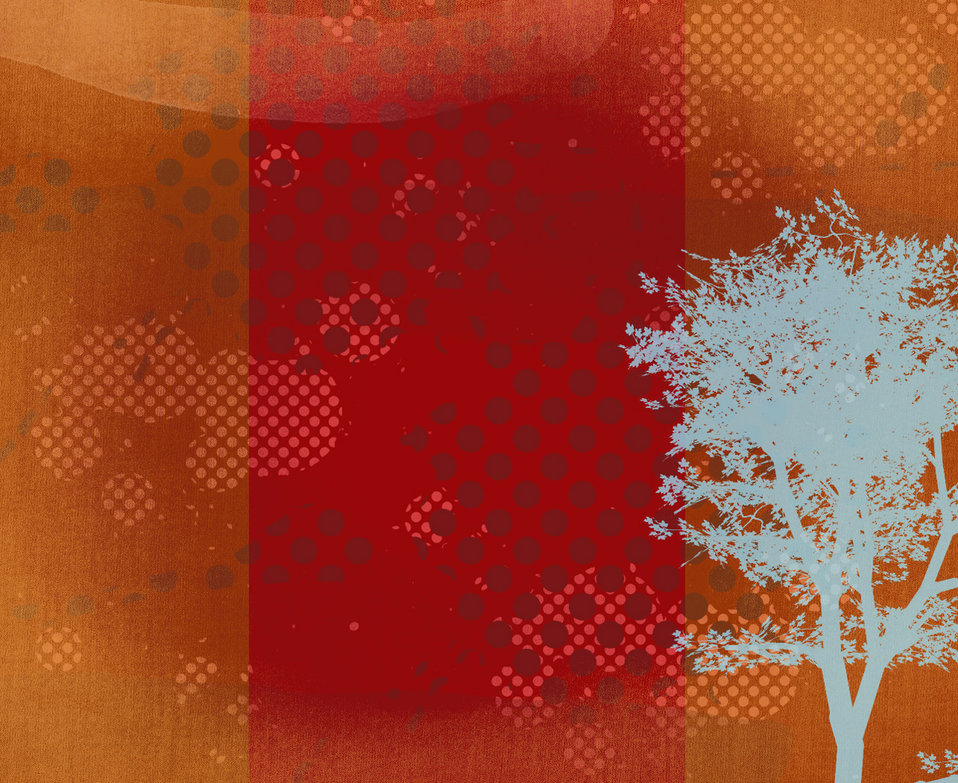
Solitary tree

Rusty red background with some random dots and a blue tree..